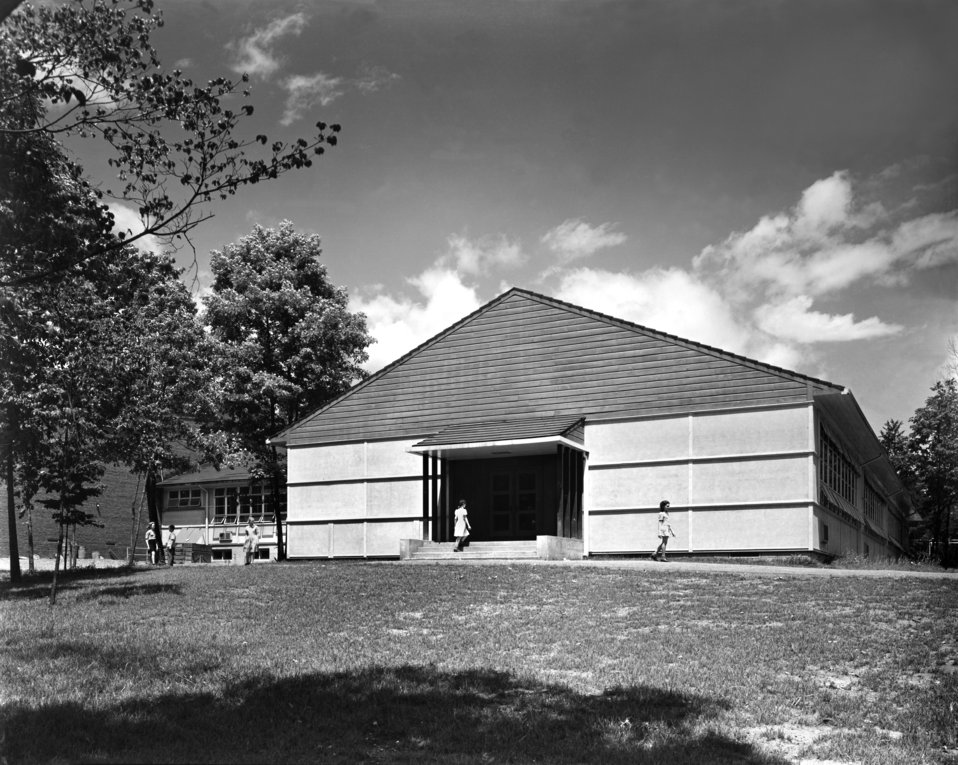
Cedar Hill Elementary School Oak Ridge 1944

MED-153 DOE photo Ed Westcott 1944 Oak Ridge Tennessee